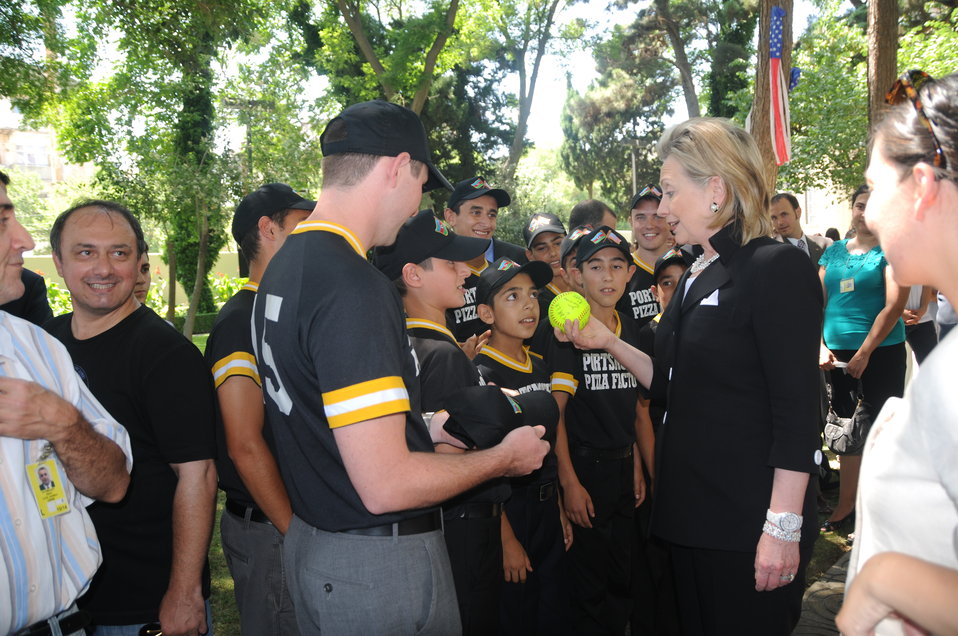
Secretary Clinton Speaks With an Azerbaijani Youth Softball Team

U.S. Secretary of State Hillary Rodham Clinton speaks with an Azerbaijani youth softball team, along with Peace Corps volunteer Mathias Jackson (far left) and James Wrockage (far right), in Azerbaijan on July 4, 2010. Azerbaijani children’s names include: Gadir Huseynov, Tarlan Aliyev, Kheyal Huseyinzade, Jabrail Jabrailzade, Kamran Jabrailzade, Hasanali Damirli, Elnur Mammadli, Senan Alizade, and Rasul Demirli.